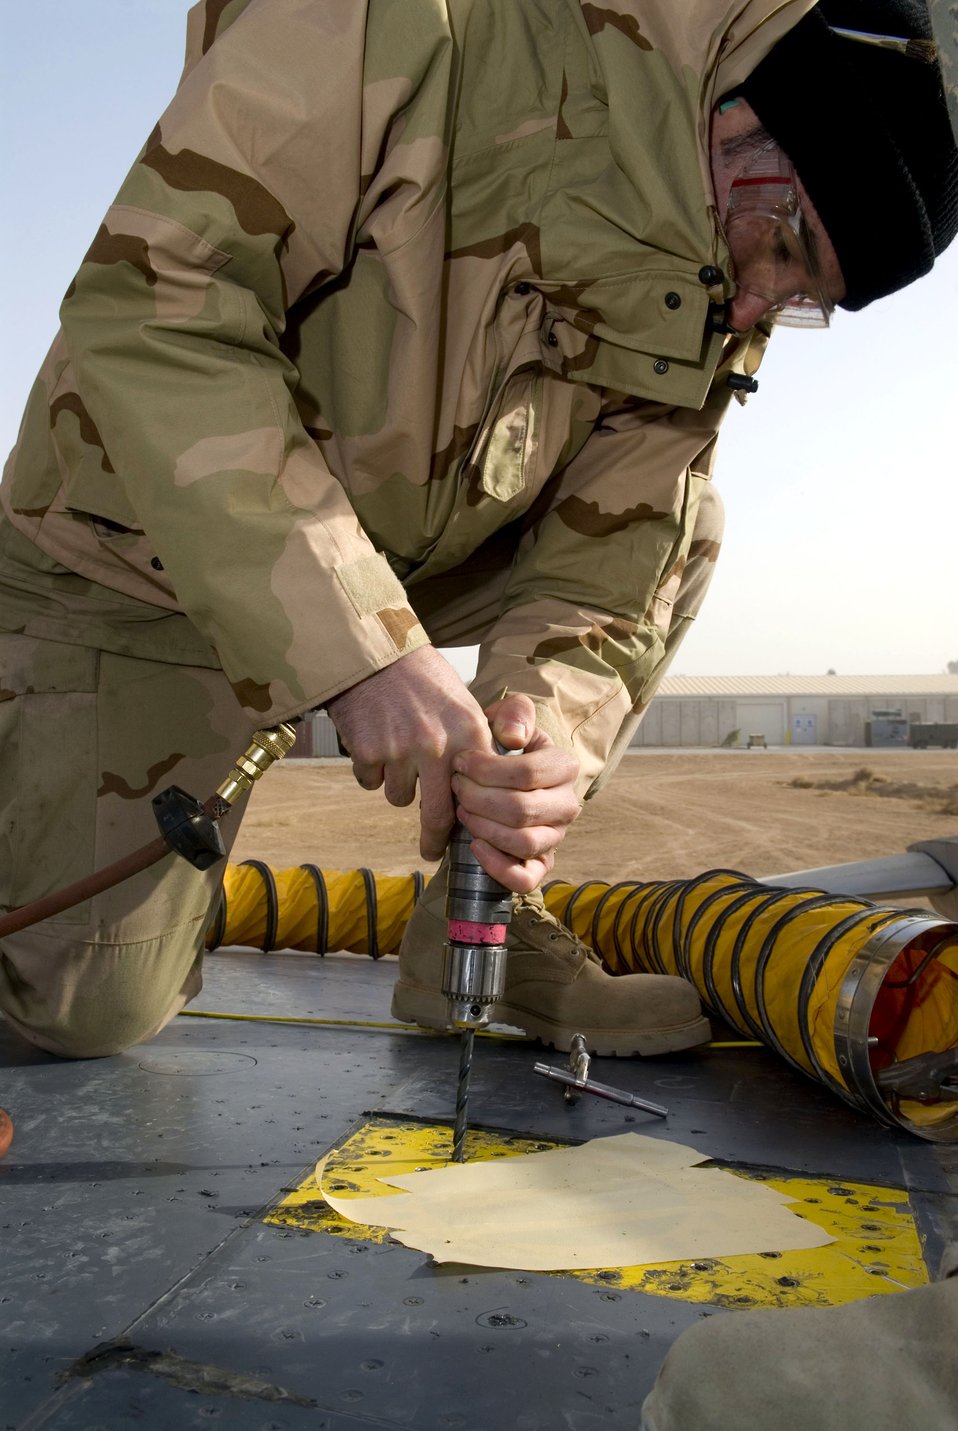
Nuts and bolts

Airman 1st Class Bradley Giroux uses an air drill to remove a Davis Elliptical fastener from an F-16 Fighting Falcon Dec. 22 at Balad Air Base, Iraq. The fastener is used as an internal nut plate where bolts are not needed to hold screws in place. Airman Giroux, a 332nd Expeditionary Maintenance Squadron sheet metal technician, is deployed from Spangdahlem Air Base, Germany.